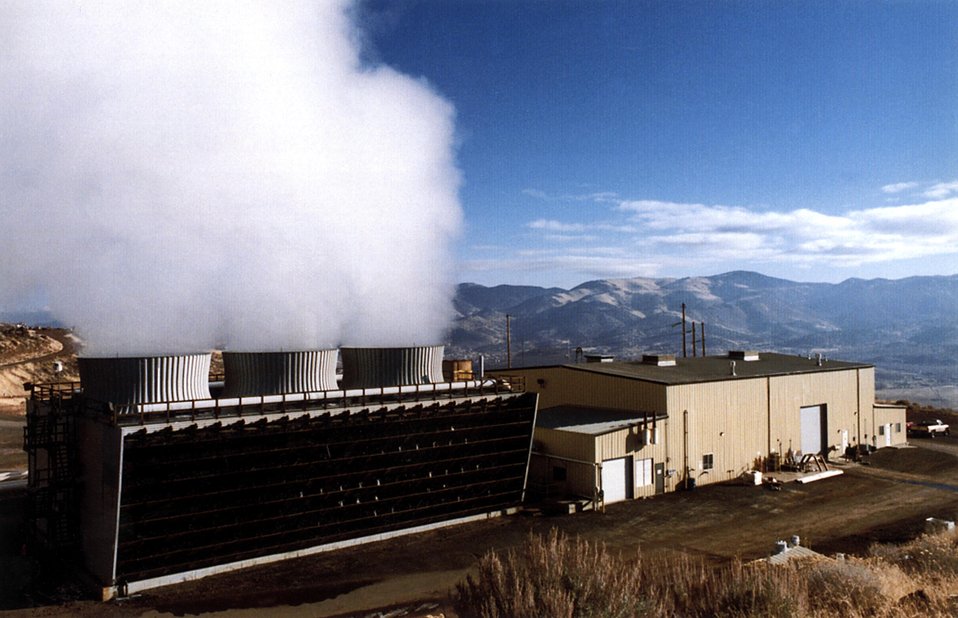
THE STEAMBOAT HILLS GEOTHERMAL PLANT IN STEAMBOAT SPRINGS, NEVADA.

THE STEAMBOAT HILLS GEOTHERMAL PLANT WAS BUILT IN 1988 AND IS CURRENTLY OWNED BY YANKEE CAITHLESS JOINT VENTURE L.P.